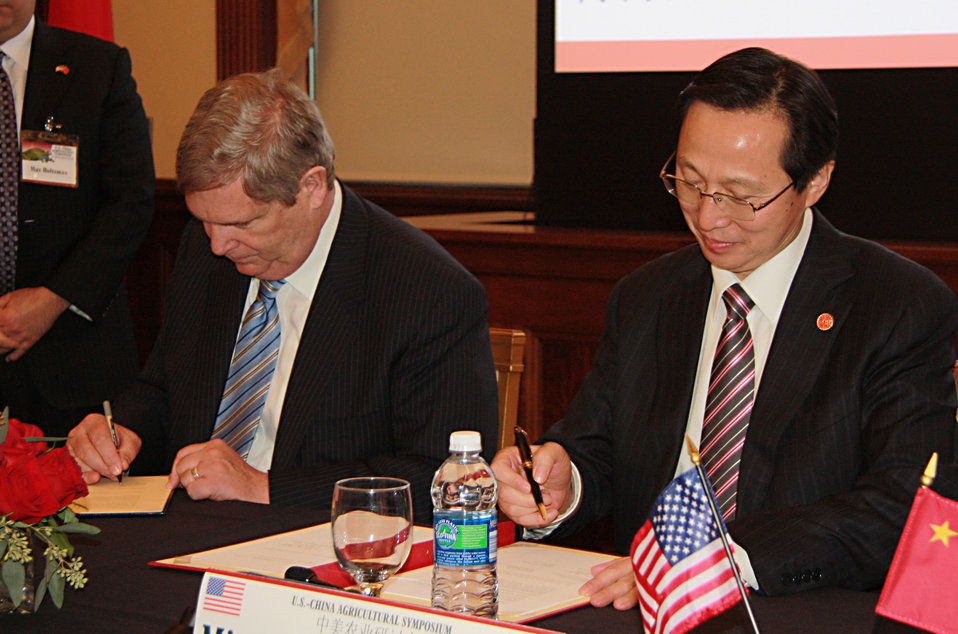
Agriculture Secretary Tom Vilsack and China's Minister of Agriculture Han Changfu today signed an historic Plan of Strategic Cooperation that will guide the two countries' agricultural relationship for the next 5 years. The plan was signed as part of the U.S.-China Agricultural Symposium held at the World Food Prize Hall of Laureates, Des Moines, IA, on Thursday, February 16, 2012. The symposium focused on bilateral cooperation in the areas of food safety, food security and sustainable agriculture, as well as enhanced business relationships between the two countries.